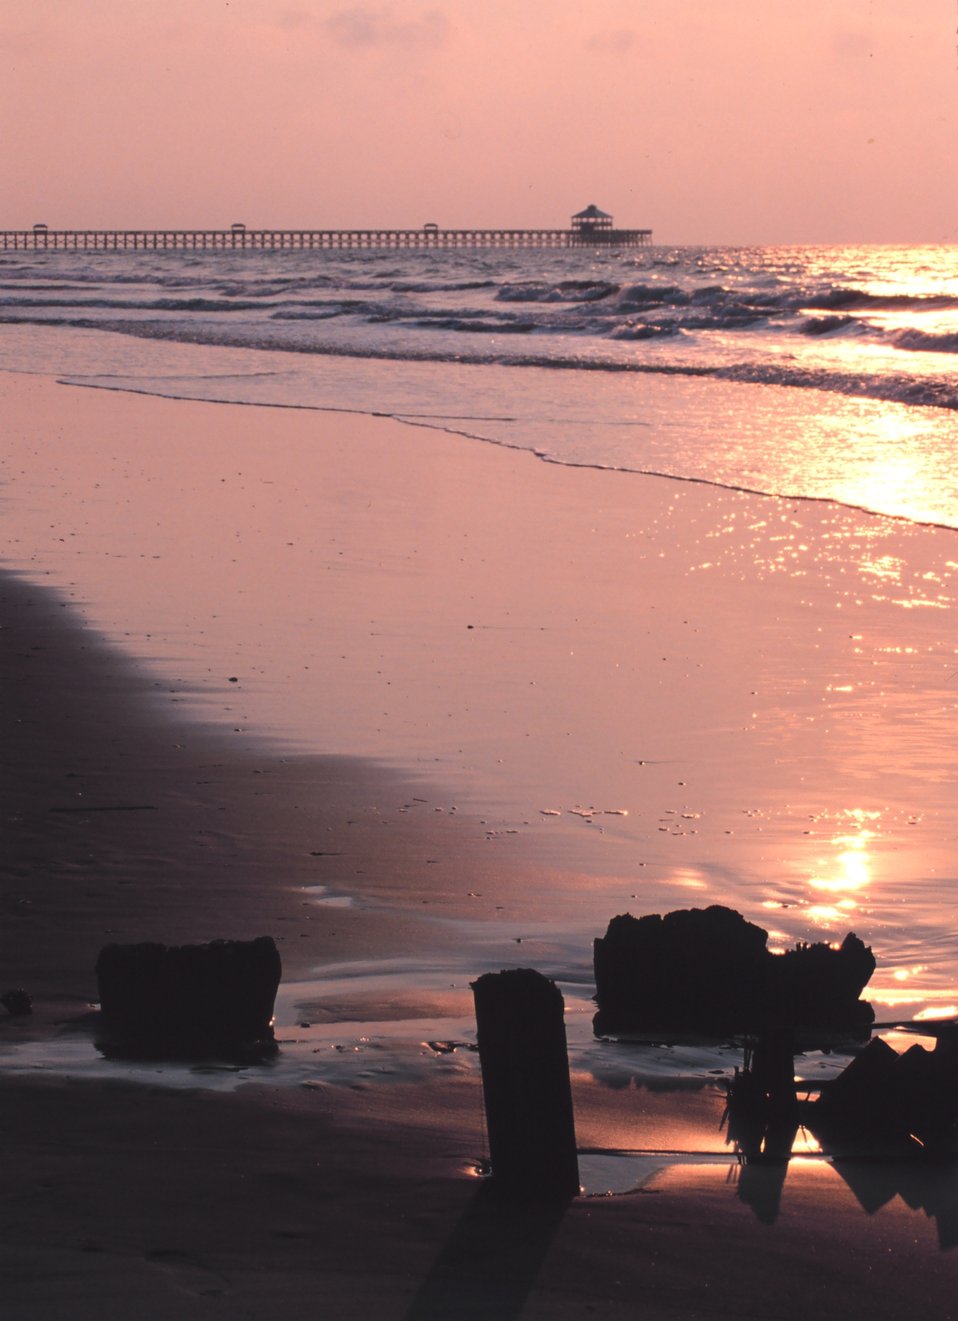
Sun rising through early morning haze reflecting in the surf